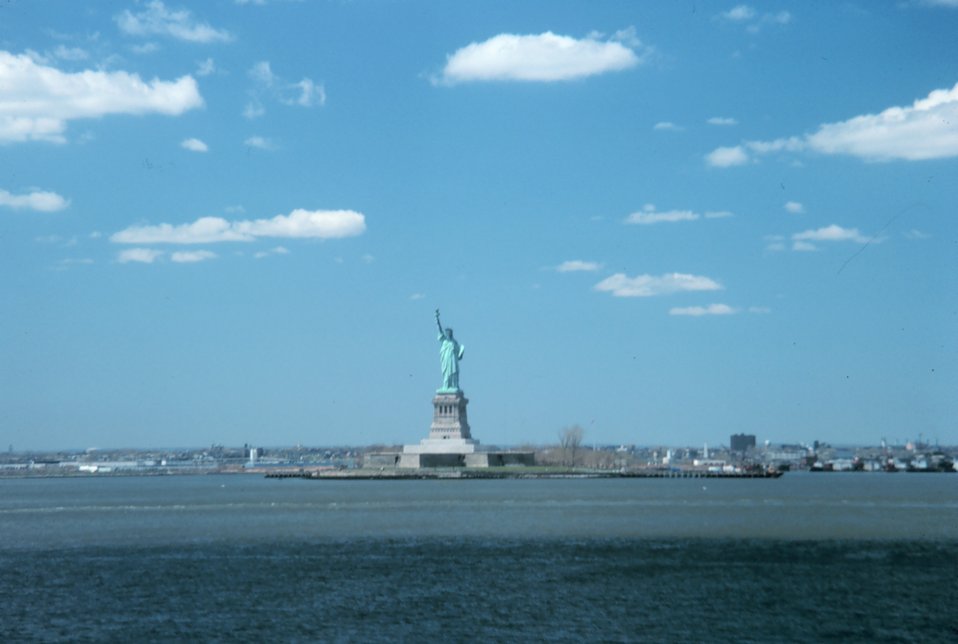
The Statue of Liberty, New York Harbor, with fair weather cumulus